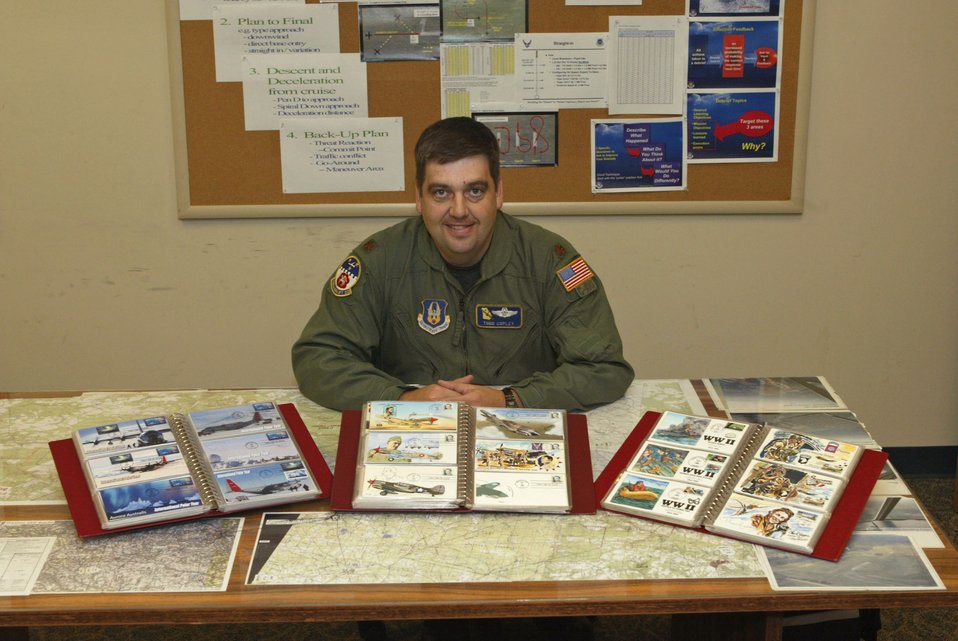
Pilot combines love of stamps, aviation to celebrate Air Force Anniversary

Maj. Todd Copley proudly displays his extensive collection of cancelled stamps. Major Copley is with the 700th Airlift Squadron, Dobbins Air Reserve Base, GA.